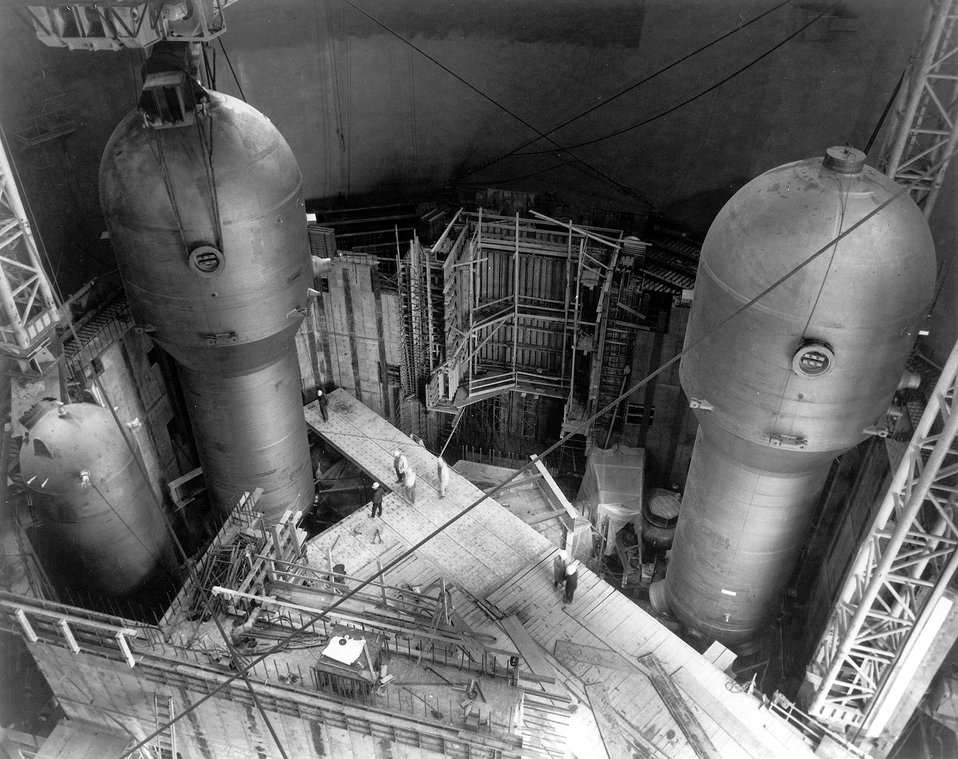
Second 500 ton steam generator for the initial unit at Baltimore Gas and Electric's Calvert Cliffs Nuclear Power Plant is lowered to its final position. Circa 1971.